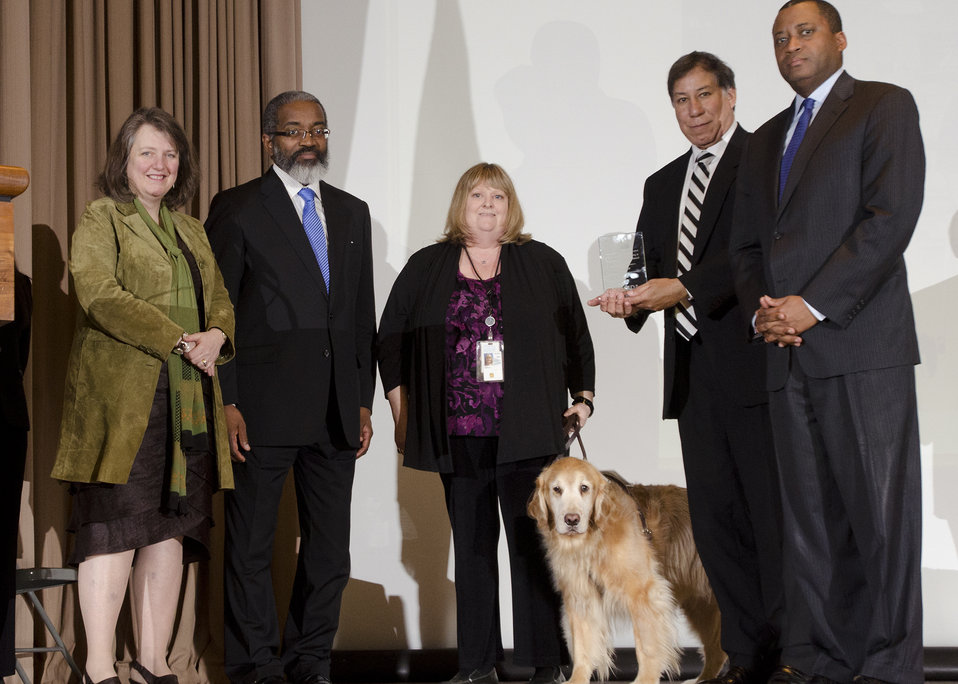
U.S. Department of Agriculture (USDA) Agricultural Research Service (ARS) Information Technology (IT) Specialist from Beltsville, MD Sandra Ball receives the Dr. Martin Luther King, Jr. National Service Day Drum Major Service Award at the USDA Jefferson Auditorium in Washington, D.C. on Tuesday, Jan. 15, 2013. (L to R, Agriculture Deputy Secretary Kathleen Merrigan, USDA Acting Assistant Secretary for Administration Dr. Gregory Parham, Sandra Ball, Agriculture Under Secretary for Marketing and Regulatory Programs (MRP) Ed Avalos, and Agriculture Assistant Secretary for Civil Rights Dr. Joe Leonard).